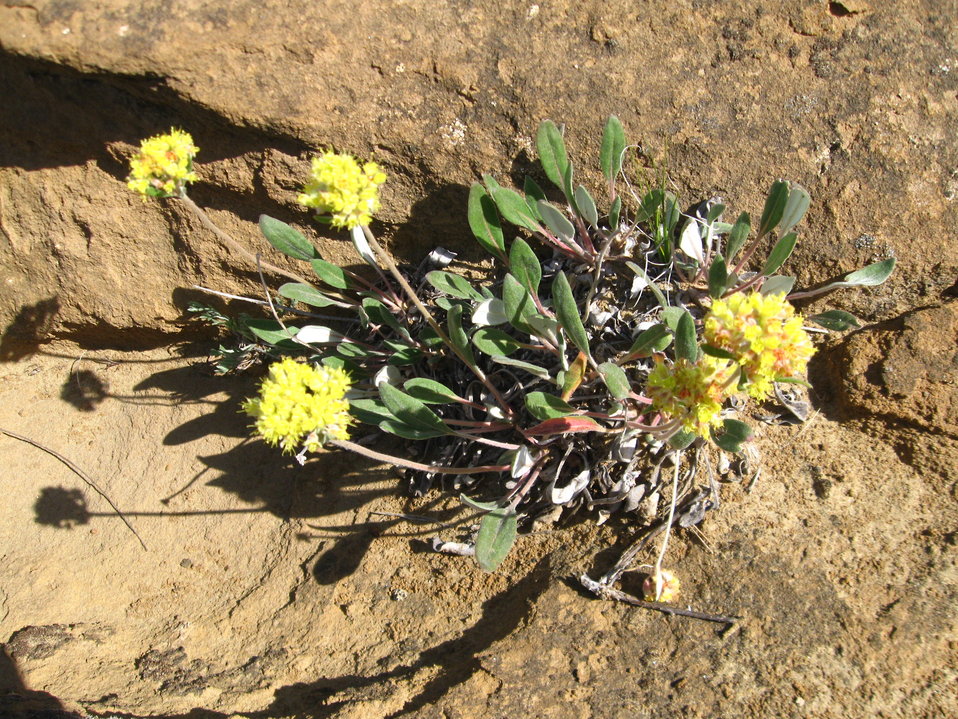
Yellow Wild Buckwheat

This perennial is deep-rooted and drought tolerant. it's found in rocky, gravelly or barren areas.